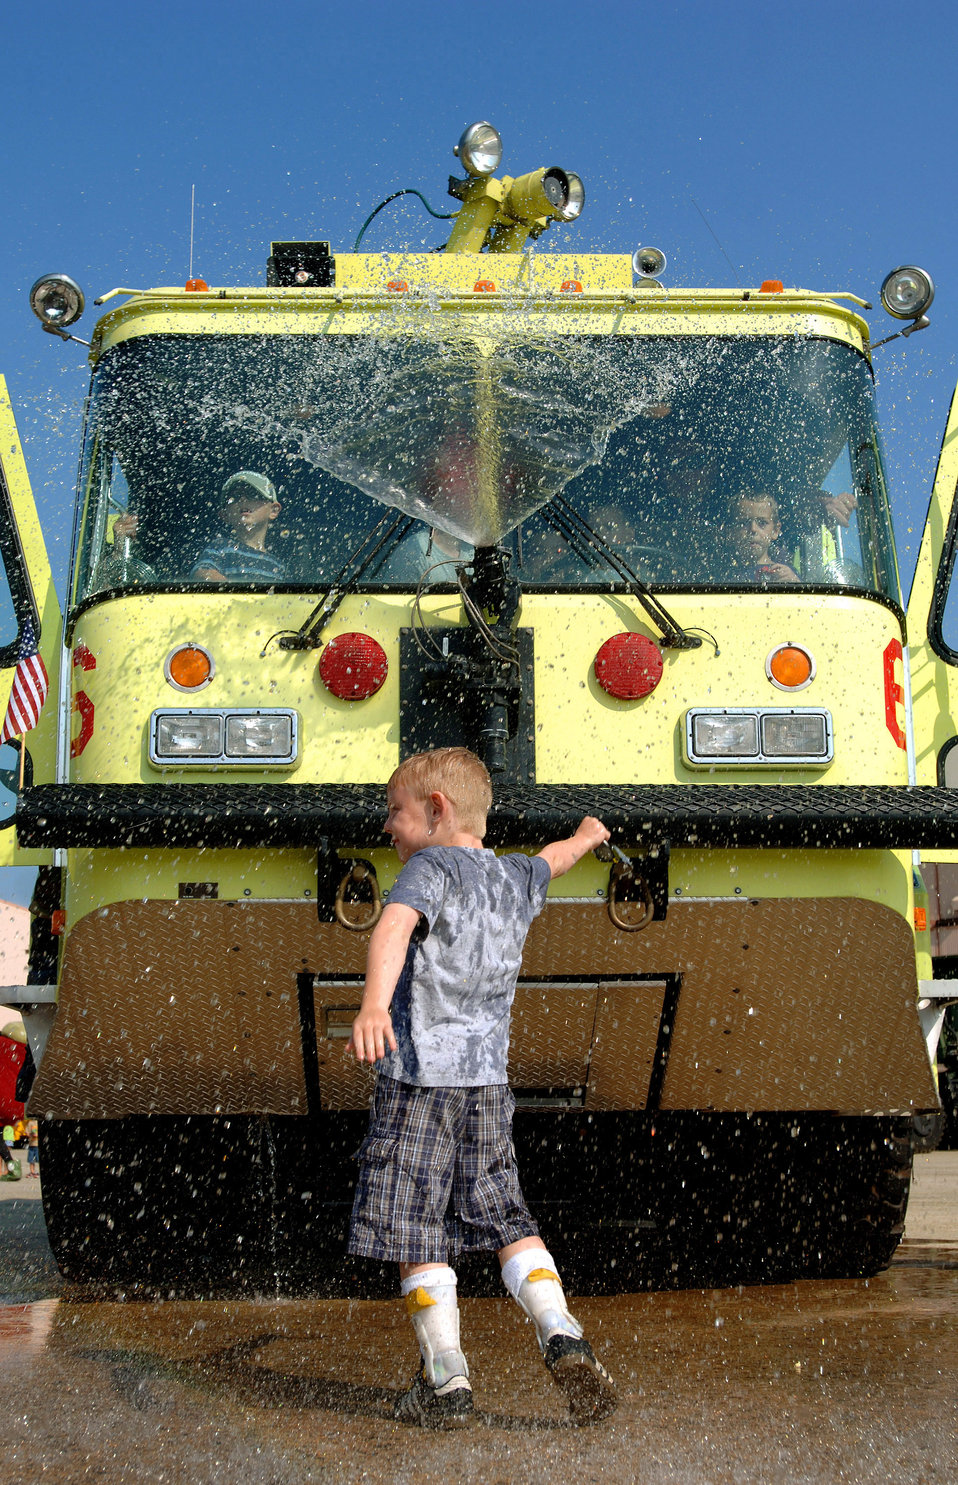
A day to remember

Seven-year-old Teagan from Portsmouth, N.H., dances in water sprayed from a fire truck Aug. 17 at the 2007 Wings of Hope Air Show for children with special needs at Pease Air National Guard Base, N.H. The truck was on display at the air show, held in conjunction with Air Force Week New England.